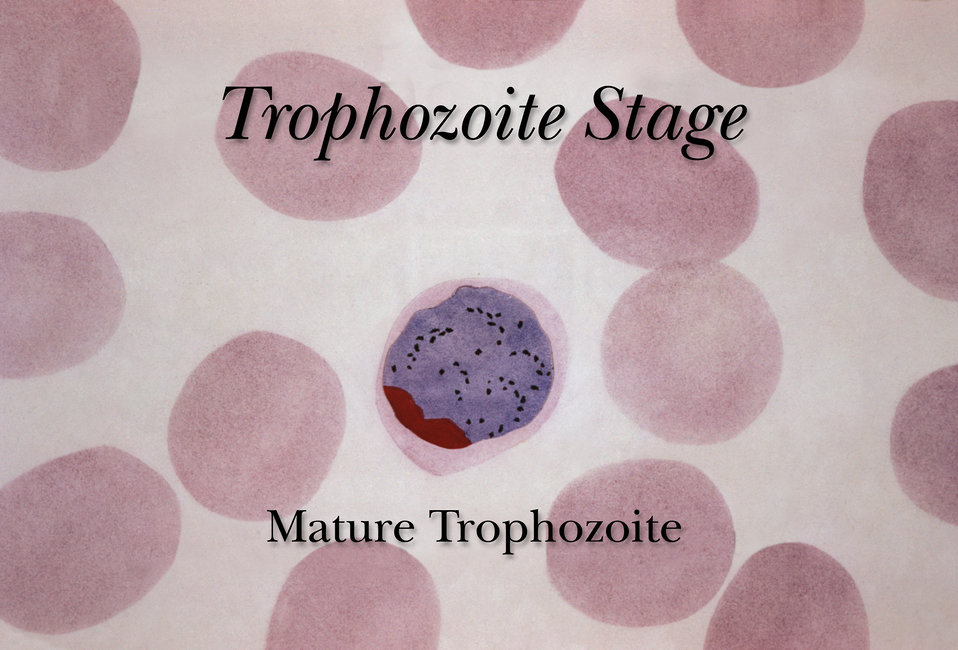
A mature erythrocytic trophozoite during the Plasmodium spp. life cycle.